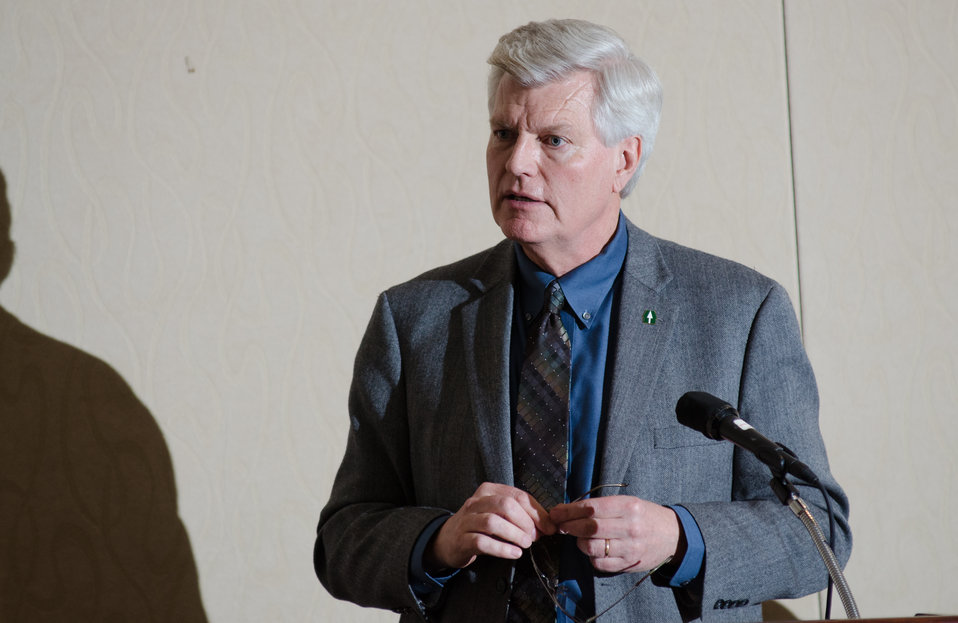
Ecological Restoration Institute Regents’ Professor and Director Wally Covington speaks about “What Forest Restoration Means for Agriculture and Communities,” during the 2013 Agricultural Outlook Forum, held at the Crystal Gateway Marriott Hotel, Arlington, Virginia on Thursday, Feb. 21, 2013. This annual Forum brings together producers, policymakers, and business, government, and industry leaders to meet, exchange ideas, and discuss timely agriculture issues.